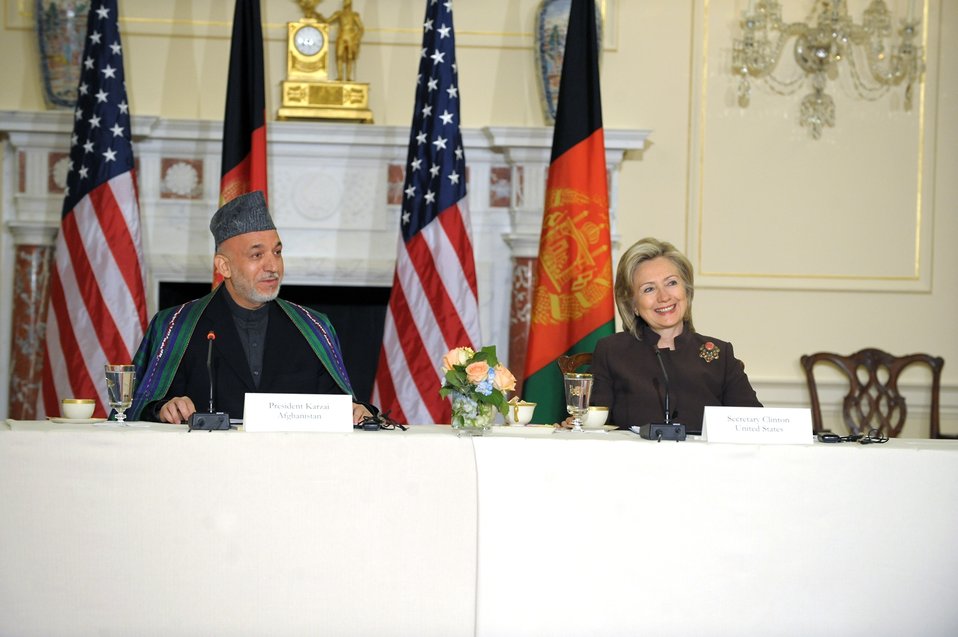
Secretary Clinton Hosts Bilateral Meeting With Afghan President Karzai

U.S. Secretary of State Hillary Rodham Clinton speaks with President of the Islamic Republic of Afghanistan Hamid Karzai during their bilateral meeting in the Ben Franklin Room at the U.S. Department of State, Washington, D.C., May 11, 2010.